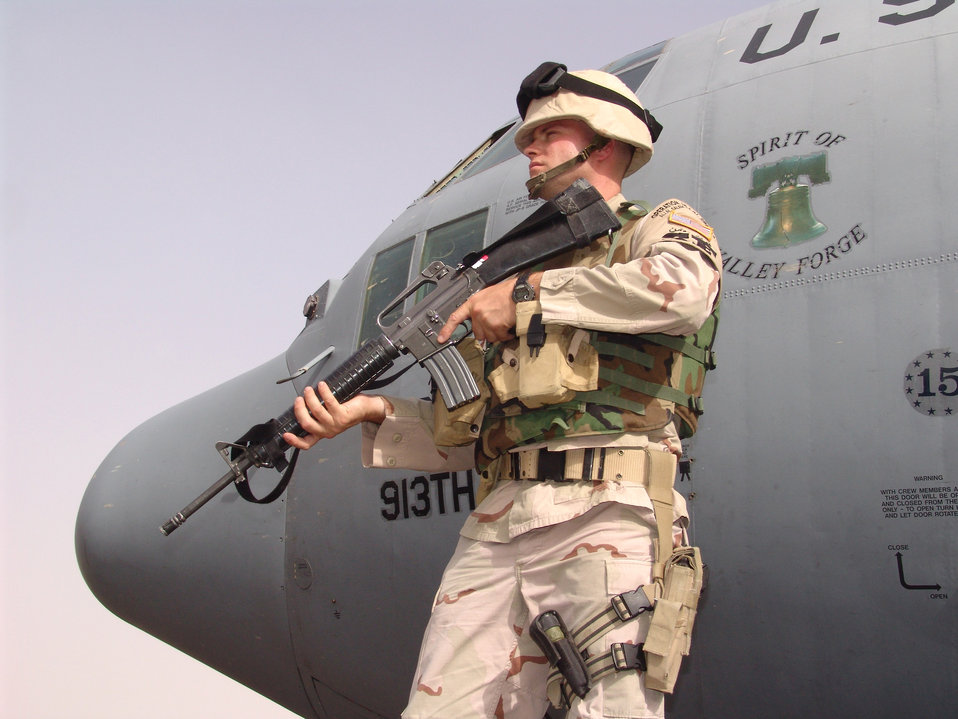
Operation IRAQI FREEDOM

SOUTHWEST ASIA -- Senior Airman Anthony Trivarelli guards a C-130 Hercules and crew after arriving at a forward-deployed location. Ravens are a flyaway security forces team that protects aircraft and aircrews while airborne and on the ground. Airman Trivarelli is assigned to the 386th Expeditionary Security Forces Squadron and is deployed from Travis Air Force Base, Calif.